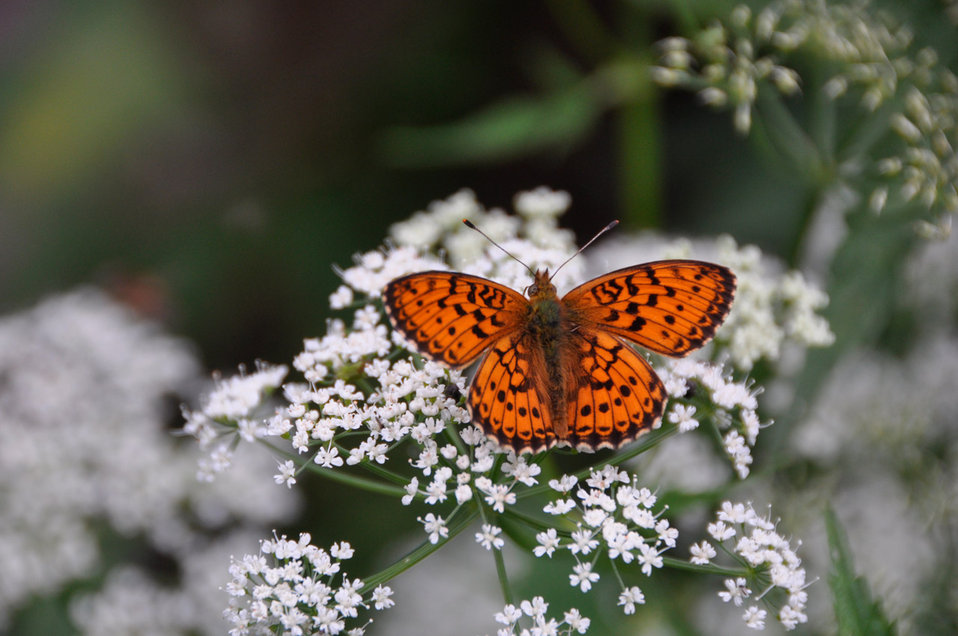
Butterfly sunbathing in the sun.